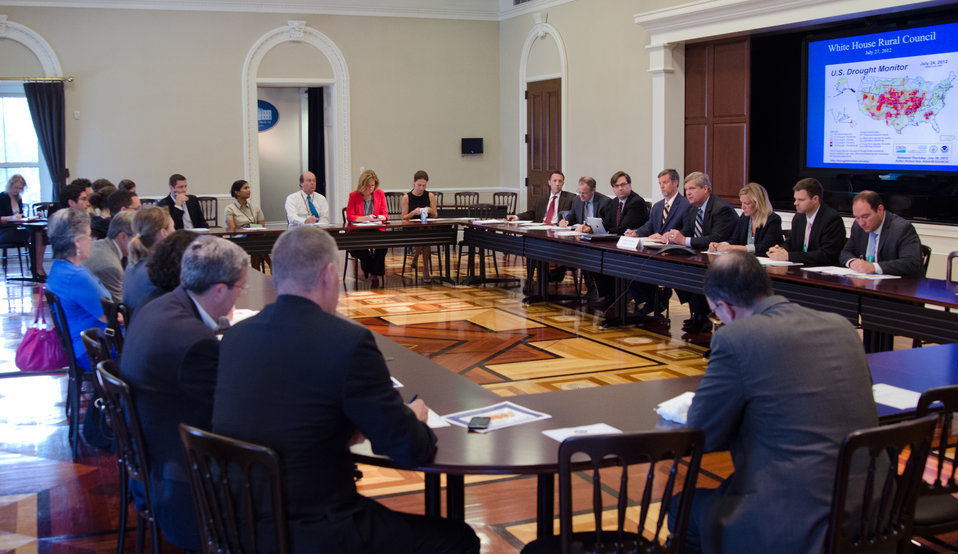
Agriculture Secretary Tom Vilsack chaired a meeting of the White House Rural Council at the Executive Office Building in Washington, D.C. on Friday, July 27, 2012 to update members and stakeholders on the Administration response to the drought and explore ways to assist American farmers and ranchers suffering in its affects.